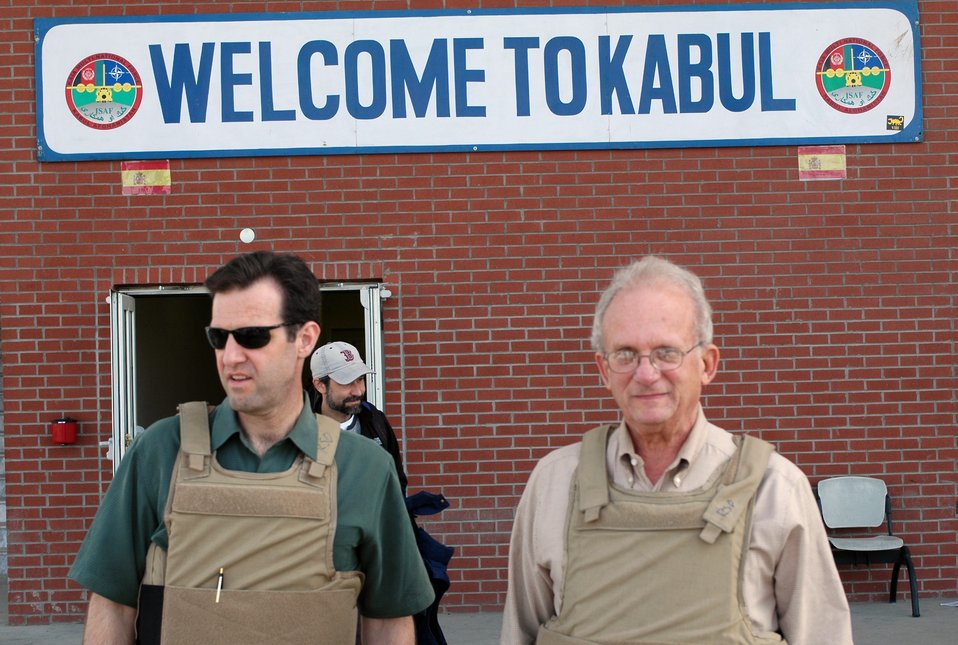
CODEL Berman